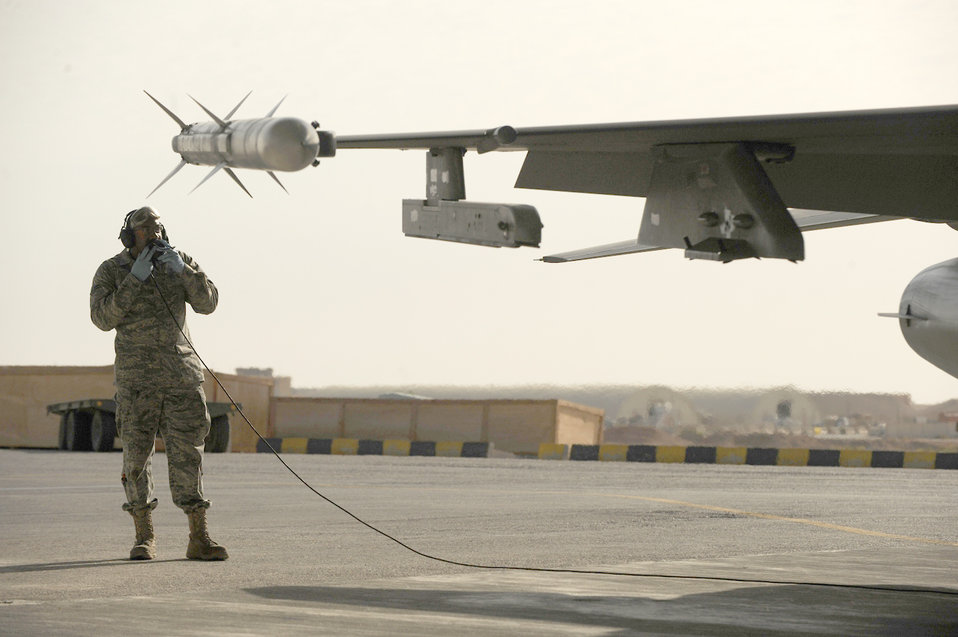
U.S., Jordan commence exercise

Airman 1st Class James King conducts pre-flight checks on an F-16 Fighting Falcon while preparing for takeoff Oct. 18, 2010, as part Falcon Air Meet 2010 at Azraq Air Base, Jordan. Airman King is assigned to the 77th Aircraft Maintenance Unit from Shaw Air Force Base, S.C.